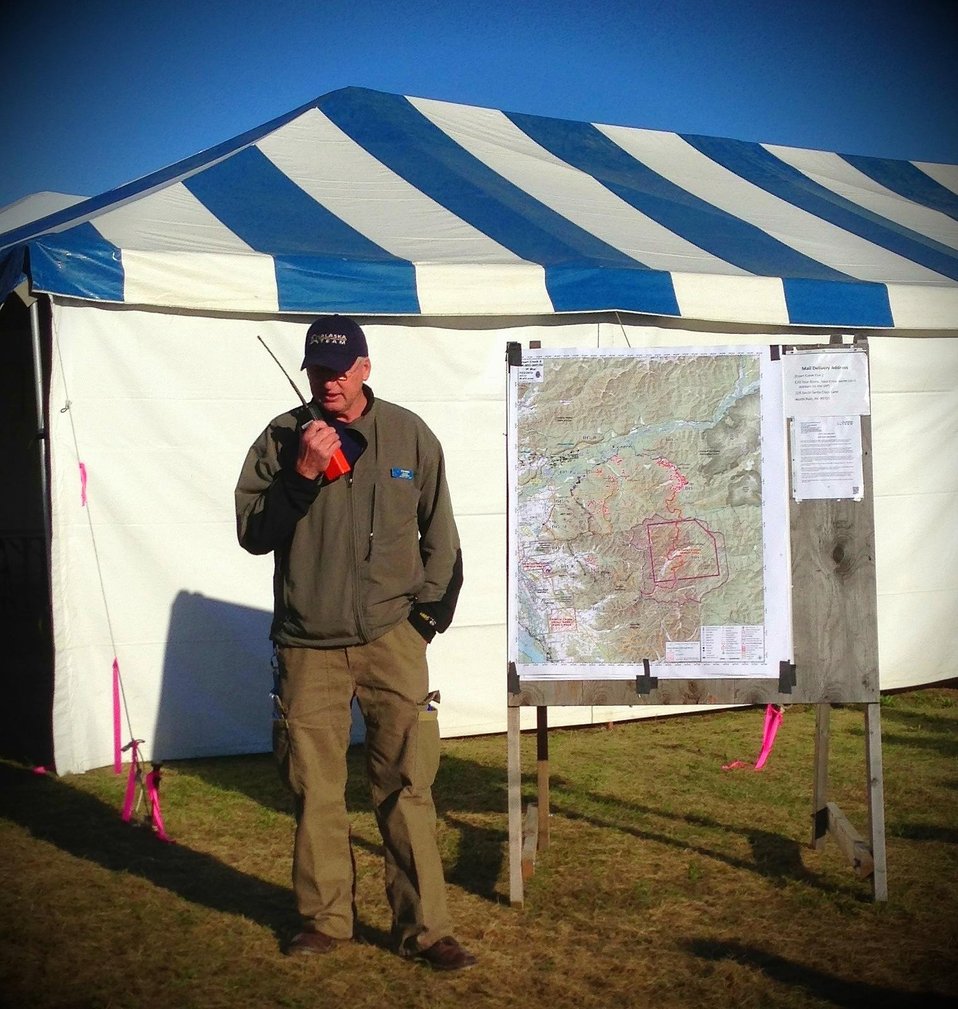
Stuart Creek Fire Incident Commander Kurth maintains constant communications with fire crews. The Stewart Creek Fire located 25 miles east of North Pole, AK began on Jun. 19, 2013 due to human causes and has consumed an estimated 85, 475 acres. The fire is approximately 71% contained.